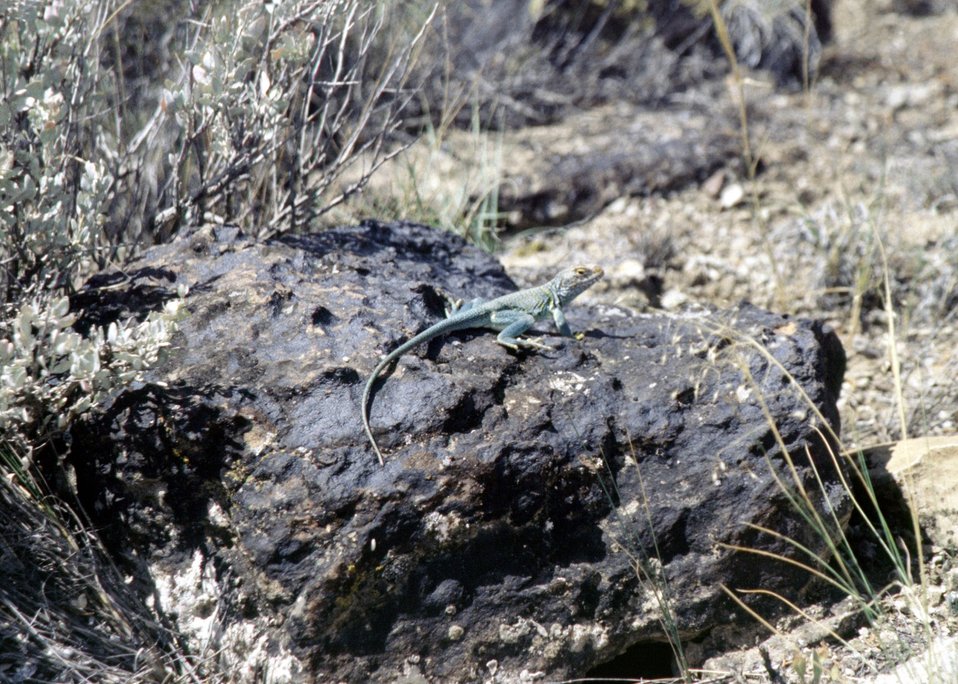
Lizard